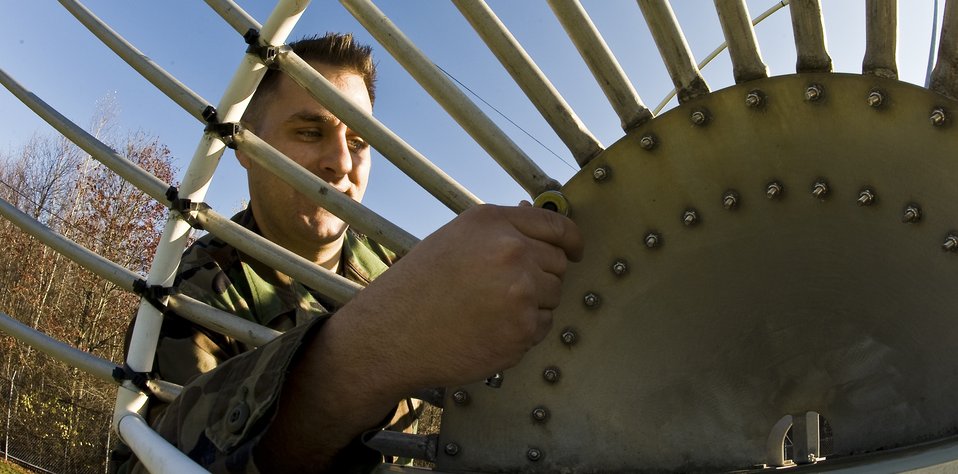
One bolt at a time...

Staff Sgt. Stephen Ensminger tightens bolts at the base of a radio antenna Nov. 18, 2009, at Sagamore Hill Solar Observatory in Hamilton, Mass. Sergeant Ensminger is a solar radio telescope technician with Det. 2 of the 2nd Weather Squadron.